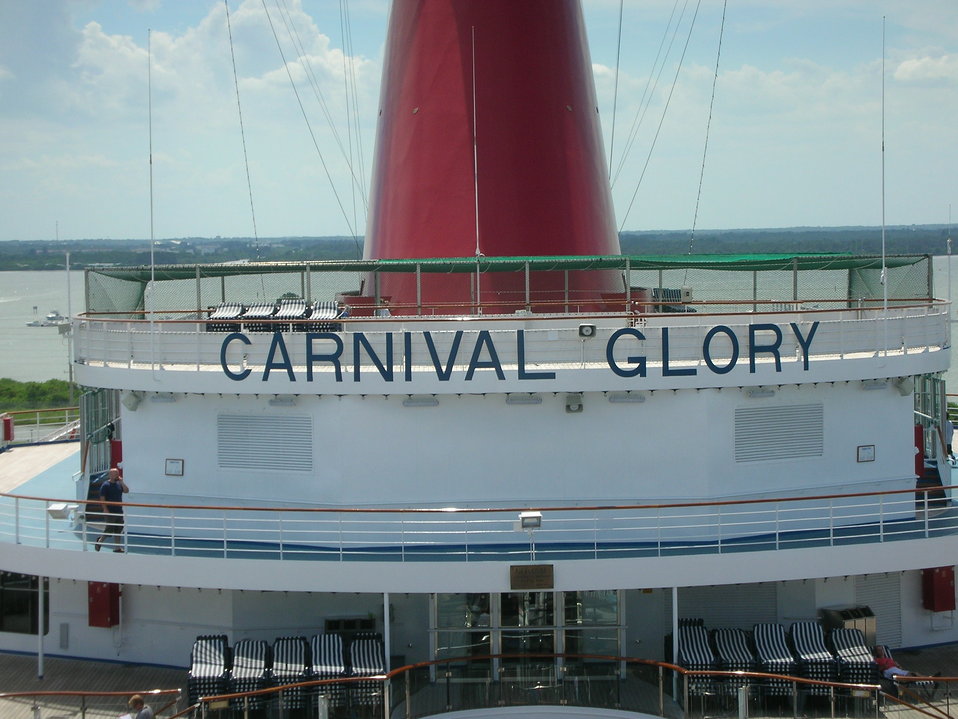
'Carnival Glory' found on the top deck above one on the entry's